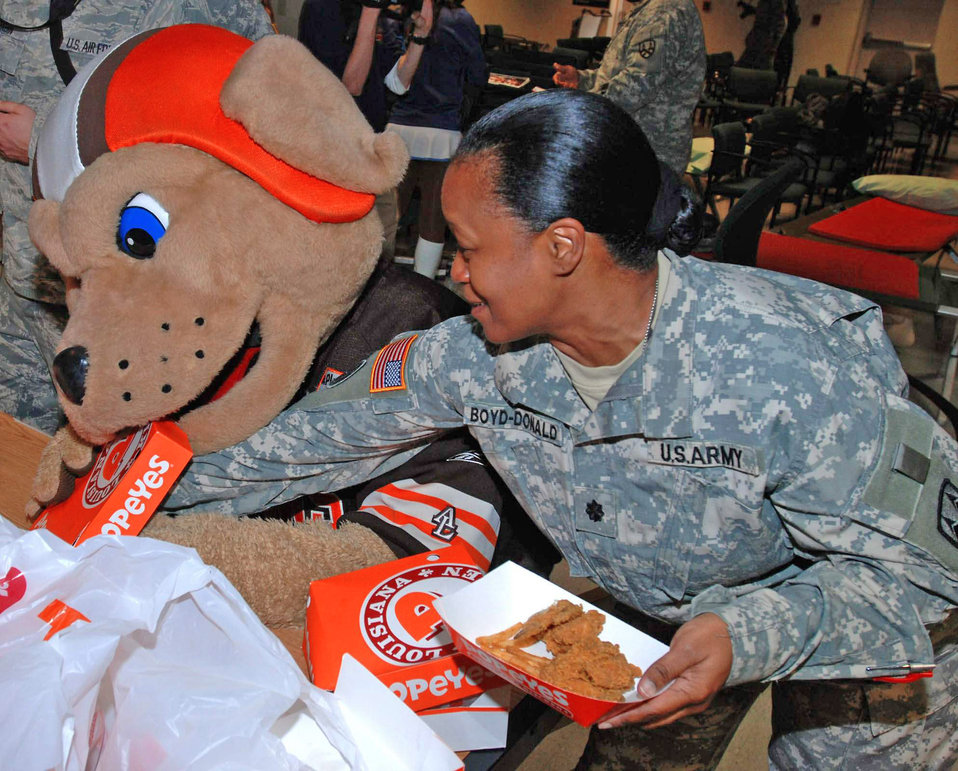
NFL Pro Bowl cheerleaders boost morale for Operation Unified Response workers

Army Lt. Col. Dana Boyd-Donald fights the Cleveland Browns' mascot for dinner Jan. 27, 2010, at Homestead Air Reserve Base, Fla. National Football League representatives visited military members, civilians and earthquake victims at Homestead ARB to offer the relief works a respite from the long hours of ongoing relief efforts. Colonel Boyd-Donald is assigned to the from the Louisiana-based 377th Theater Sustainment Command.